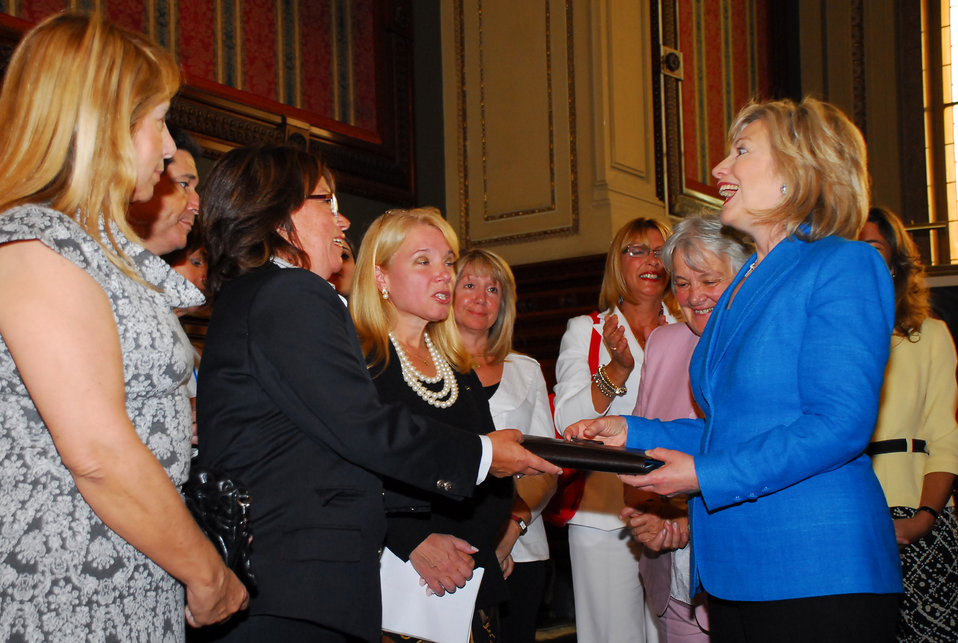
Secretary Clinton Meets With Uruguay Women Legislators

Women Legislators give U.S. Secretary of State Hillary Clinton a present after meeting with her at the Legislative Palace in Montevideo, Uruguay March 1, 2010.